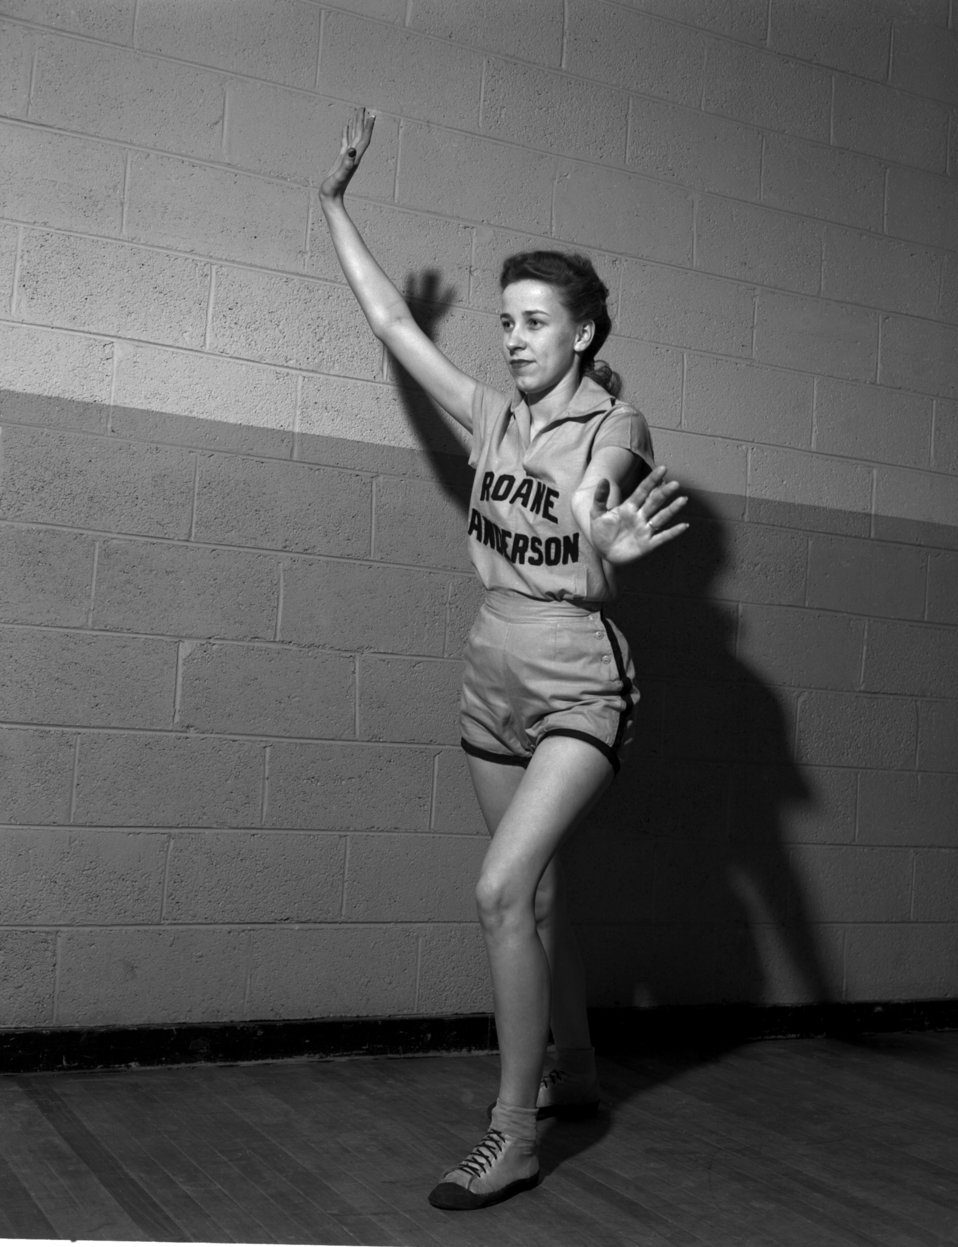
R. A. Basketball Oak Ridge

3271-4b DOE photo Ed Westcott 1-20-1947 Oak Ridge Tennessee